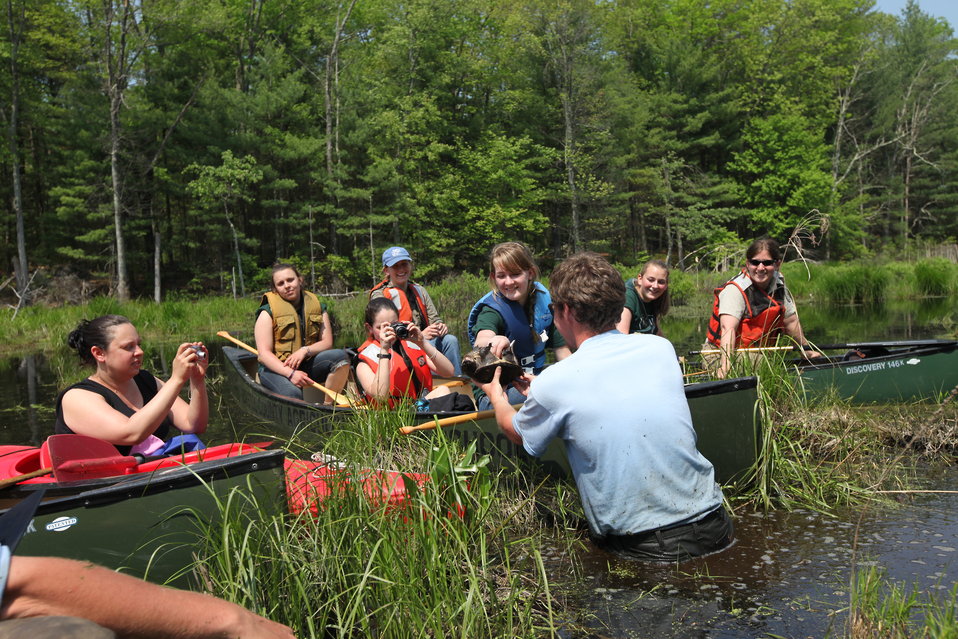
Releasing Turtles

Blanding's turtle release, Assabet River, MA.